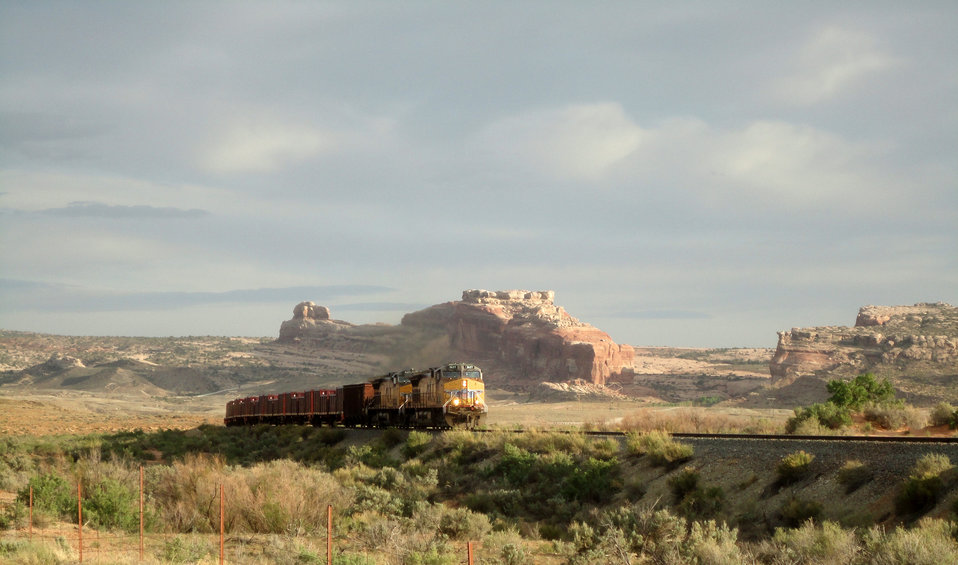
An Express Train to Crescent Junction

In the 1950s, one of the largest uranium deposits in the U.S. was found near Moab, Utah. The Department of Energy began cleaning up the uranium mill tailings from the Moab Site in April 2009, using steel containers to transport more than five million tons of tailings for safe disposal near Crescent Junction, Utah. In this May 2012 photo, one of the trains is shown on the Union Pacific Railroad in Utah, passing a butte capped by a familiar southwest U.S. rock formation known as Navajo Sandstone.